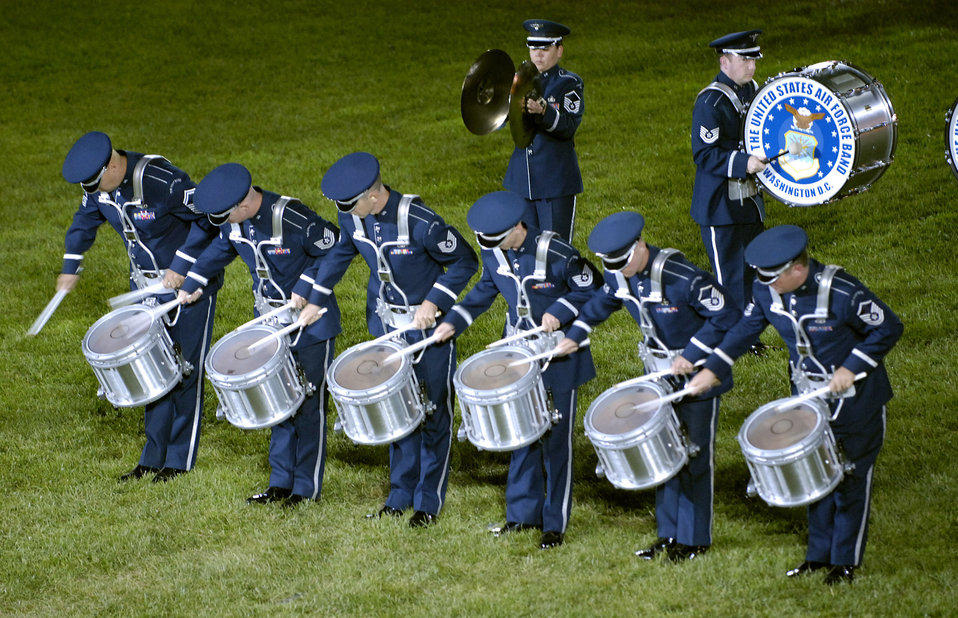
Air Force Tattoo

The Air Force Band performs during the Air Force Tattoo Sept. 23 at Bolling Air Force Base, D.C. The 2007 Air Force Tattoo, titled